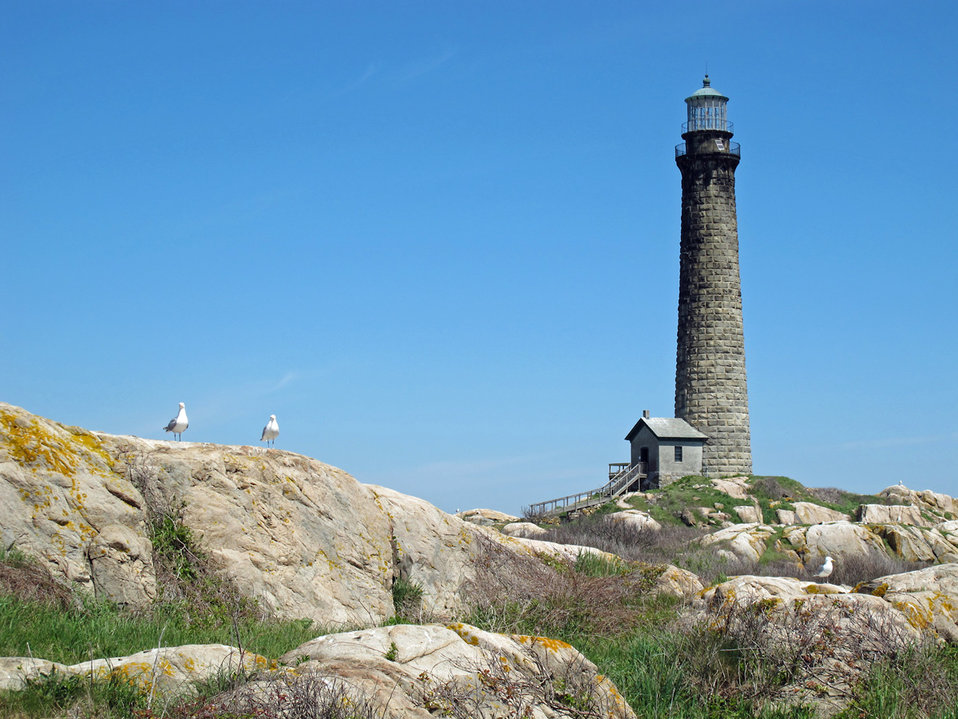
North tower

Thacher Island National Wildlife Refuge, MA.